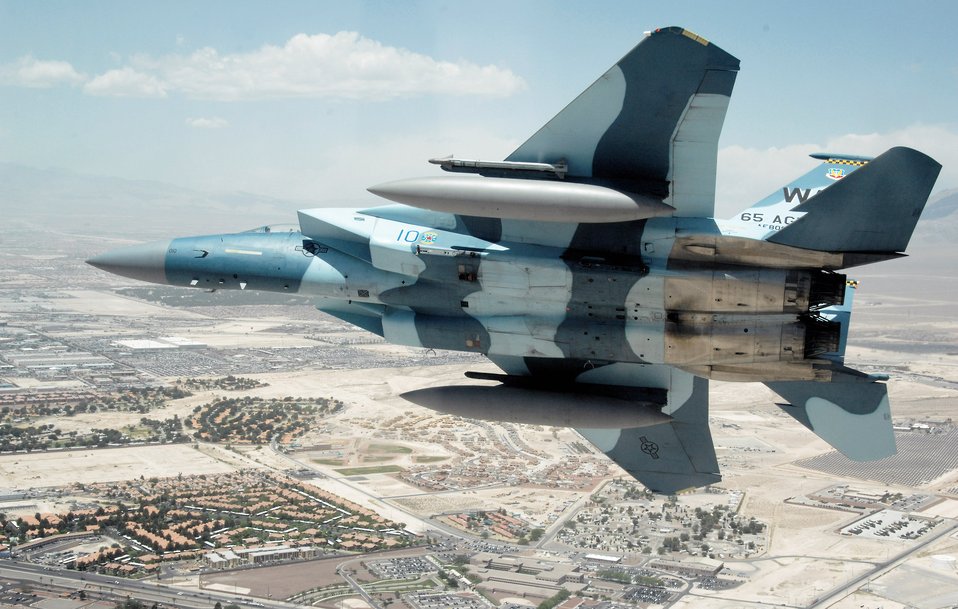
One of the 'other guys'

An F-15 Eagle in the